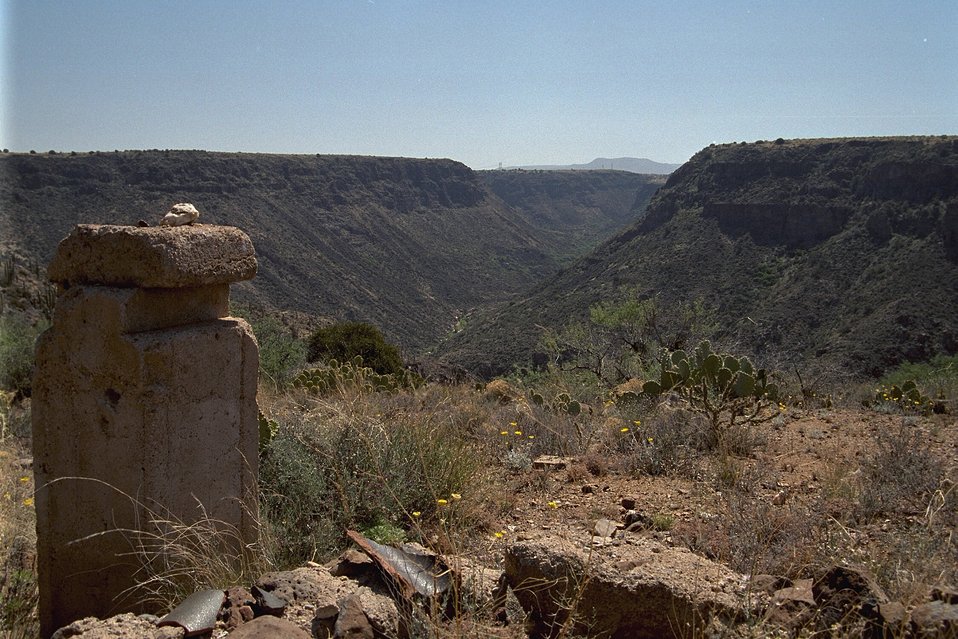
A photograph taken at the Richinbar Mine site in the Agua Fria National Monument.